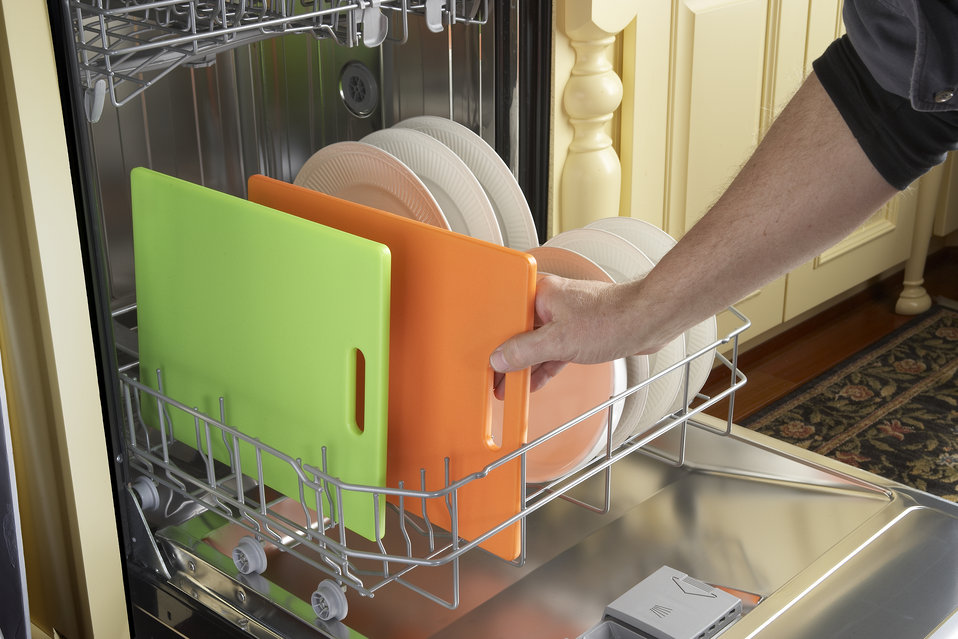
It is important to prevent cross-contamination from raw meat or poultry juices by washing all implements and cutting boards that came in contact with the raw food by washing with hot, soapy water or by using a dishwasher.